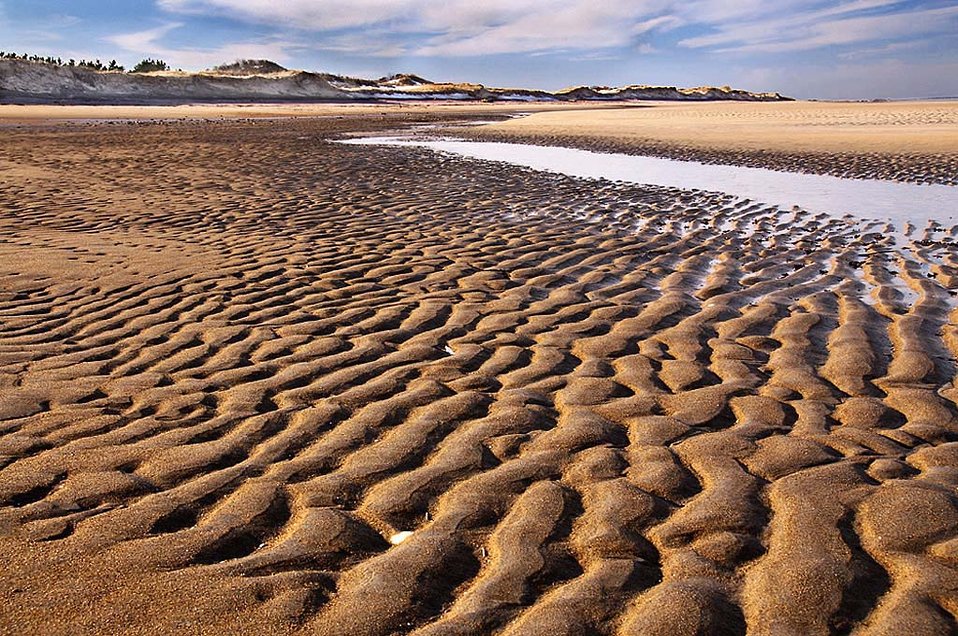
Beach

Parker River National Wildlife Refuge, MA.